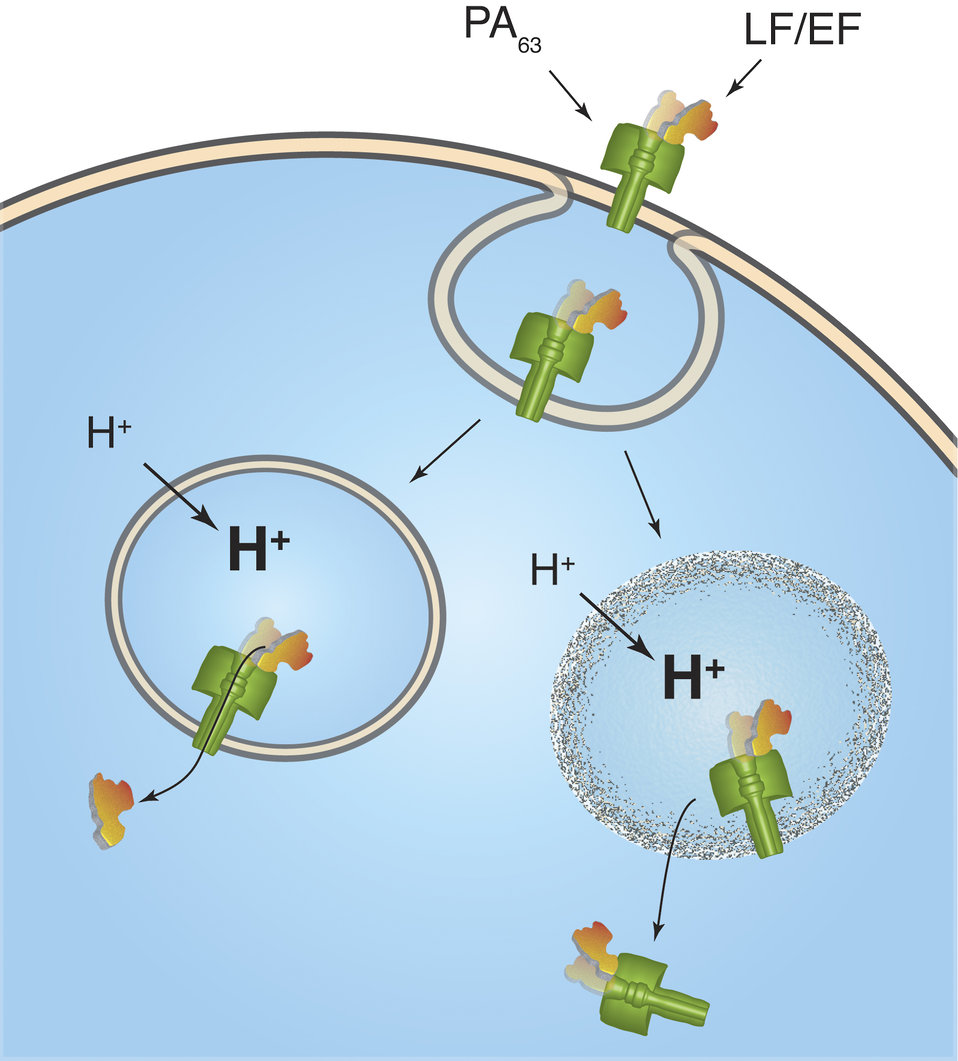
Anthrax toxins are sequestered from the cell surface (top) in a bubble-like endosome. The toxins have been thought to escape the endosome by threading their way through a hole in the endosome (lower left), but a new hypothesis suggests they may rupture the endosome (lower right).